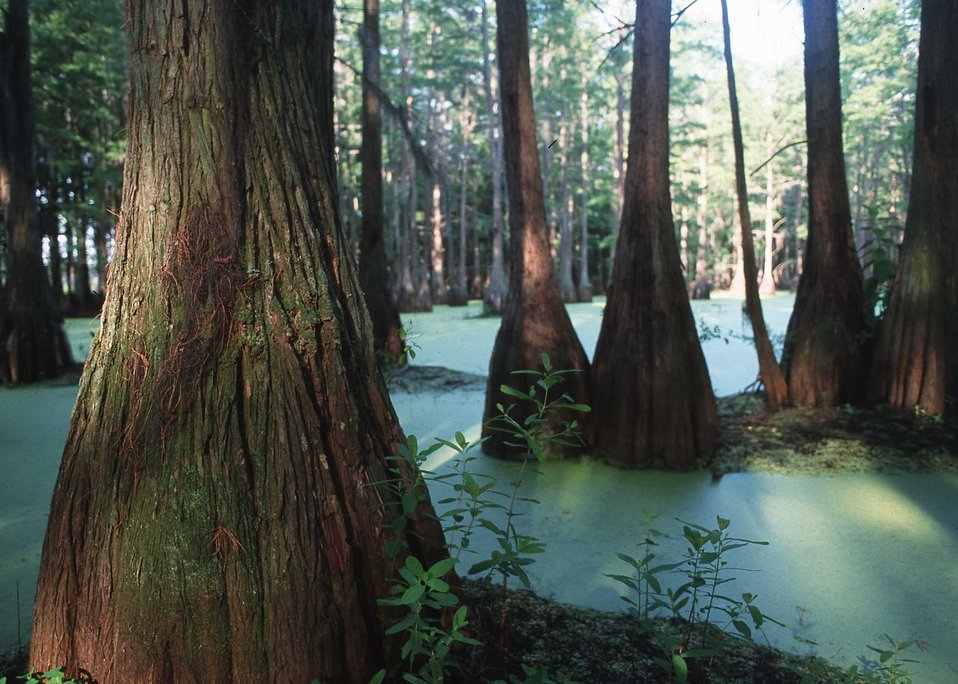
This cypress bay is a haven for many different species of wildlife.